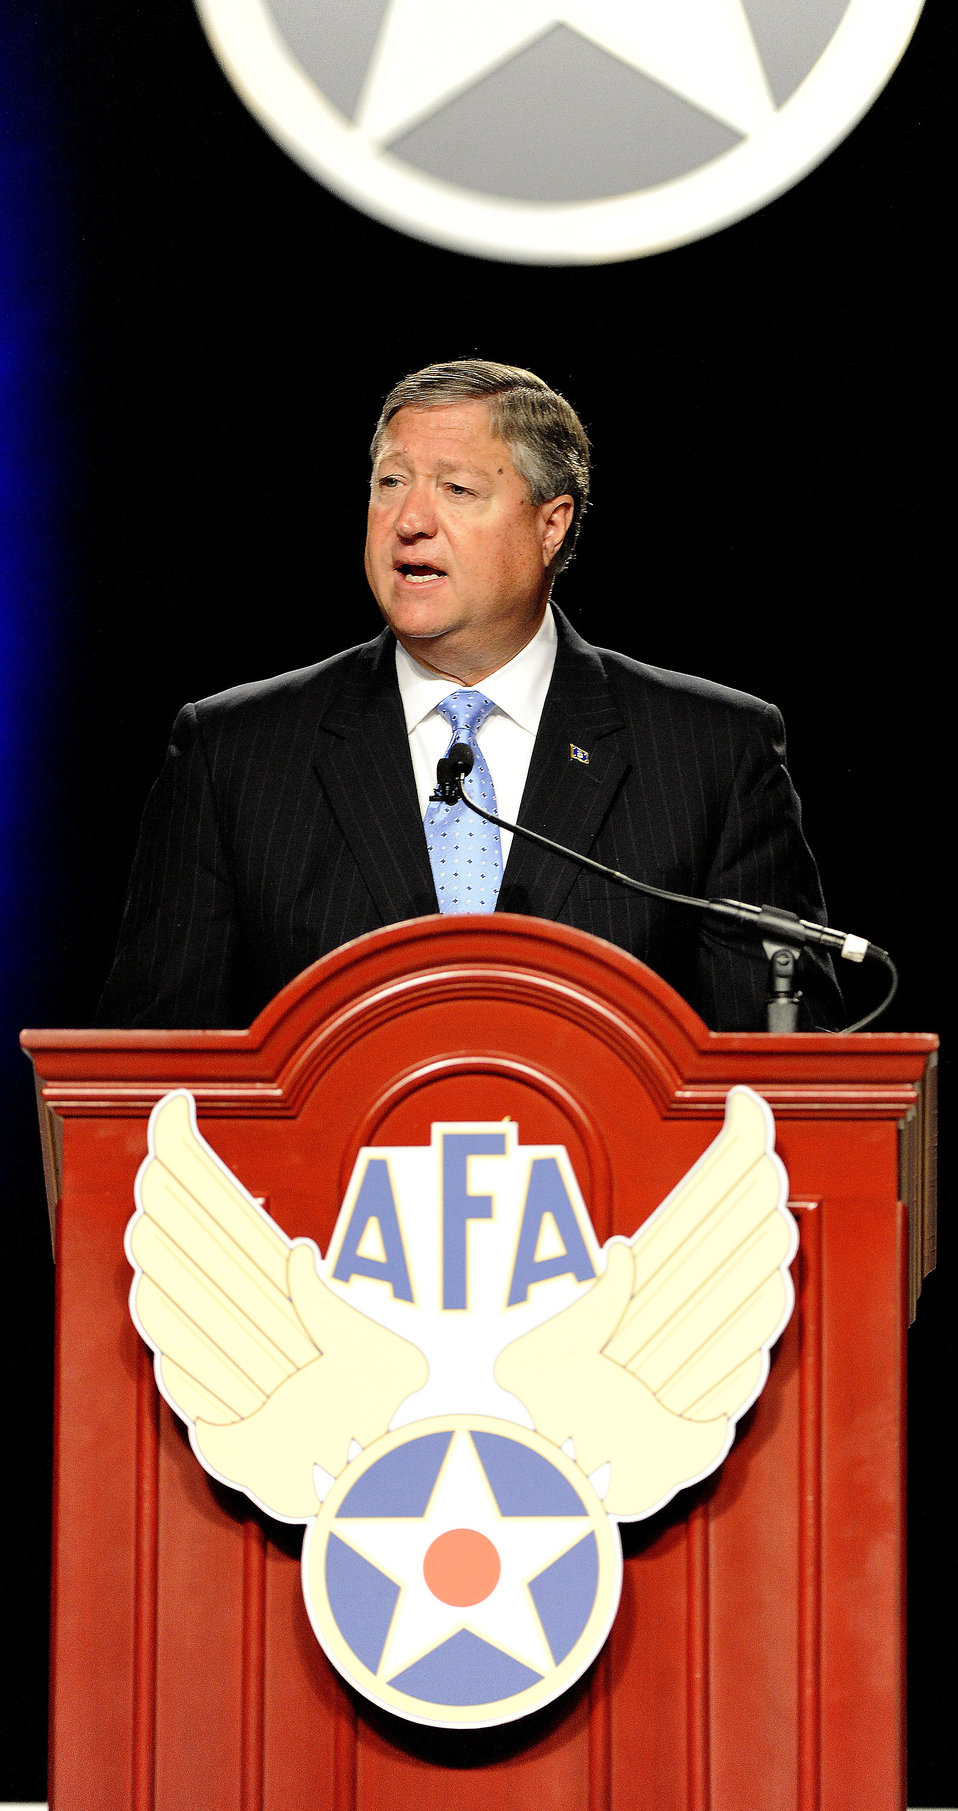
SecAF addresses AFA

Secretary of the Air Force Michael Donley delivers his keynote address during the Air Force Association's Air & Space Conference and Technology Exposition in Washington, D.C., on Sept. 17, 2012.